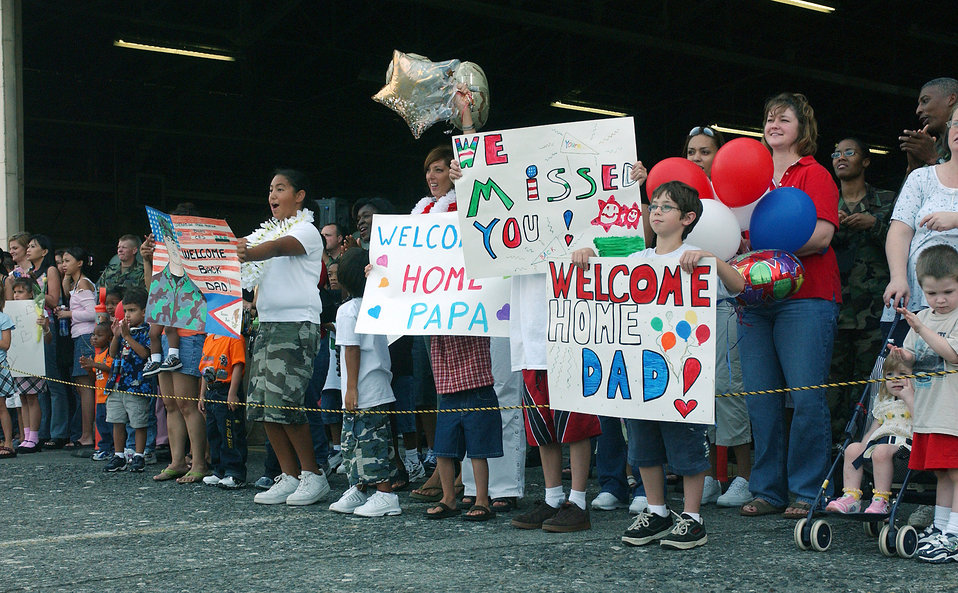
Welcome home!

YOKOTA AIR BASE, Japan -- About 300 people here wait Sept. 2 for the arrival of friends and loved ones returning from an Operation Enduring Freedom deployment.